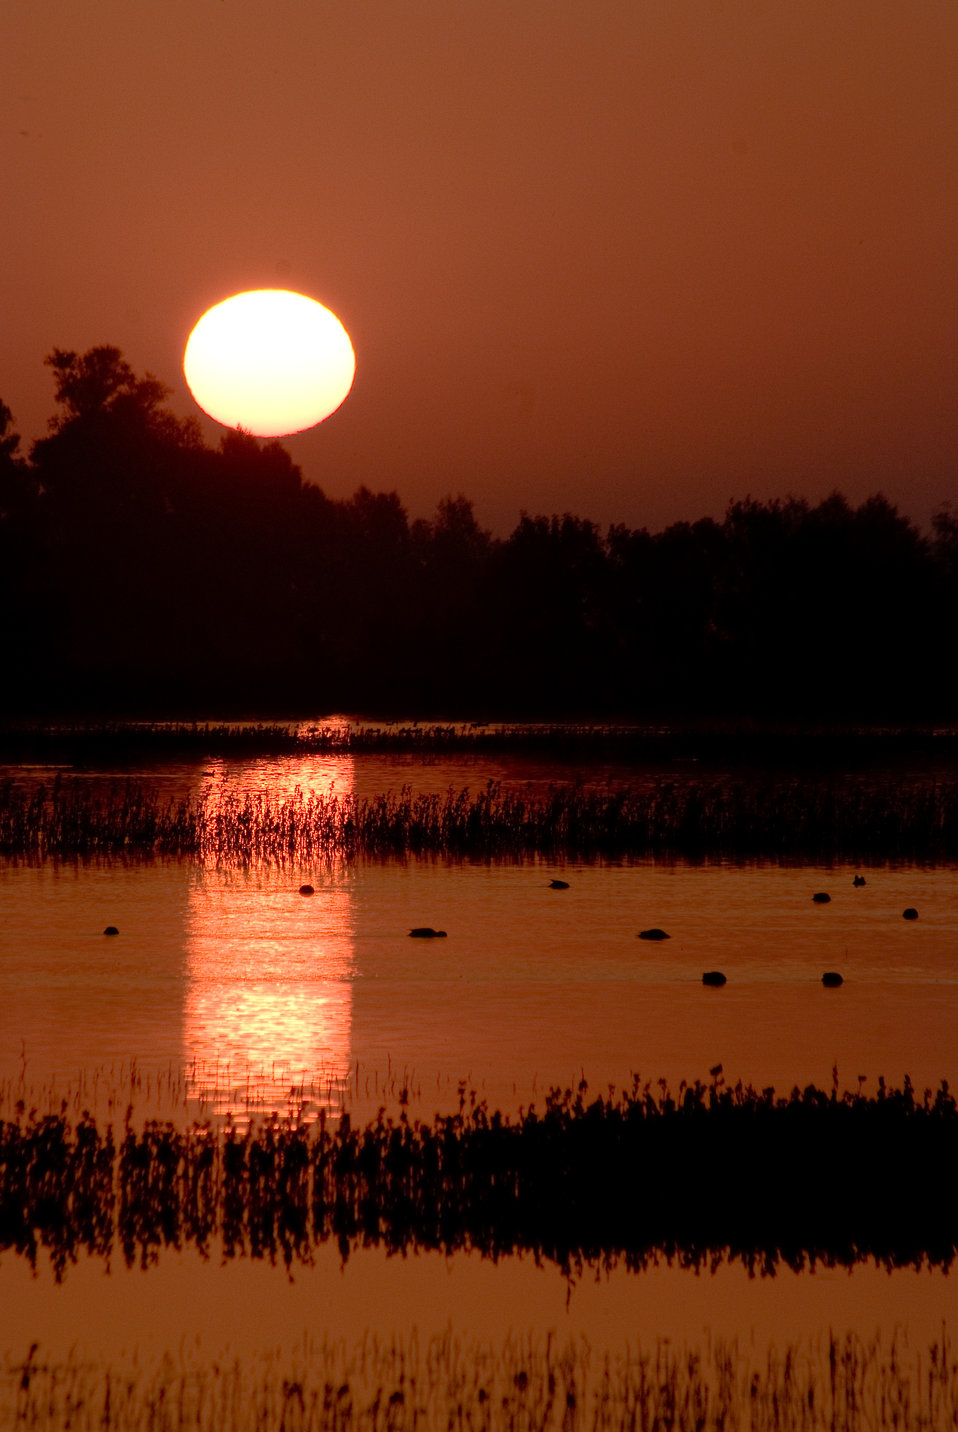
Orange sunset at Sacramento National Wildlife Refugeo

One of California's premier waterfowl refuges. Waterfowl are present from September through March. View hundreds of thousands of geese and ducks from November through January. Many other birds and mammals provide year-round viewing.

10,819 acres of seasonal marsh, permanent ponds, and uplands in the heart of the Sacramento Valley. Numerous recreation opportunities are available. Leisurely enjoy a wildlife exhibit, bookstore, and Discovery Room in the Visitor Center. The Center is open everyday from 9 a.m. through 4 p.m. November through February and weekdays only the rest of the year. Interpretive kiosks, benches and restrooms are located outside the Center making, them available year-round. Travel the six-mile auto tour and two-mile walking trail, which meander along marshes and riparian areas. On a separate area of the Refuge, waterfowl and pheasant hunting are permitted seasonally. Call (530) 934-7774 to hear a recorded message about current waterfowl populations and public use information.